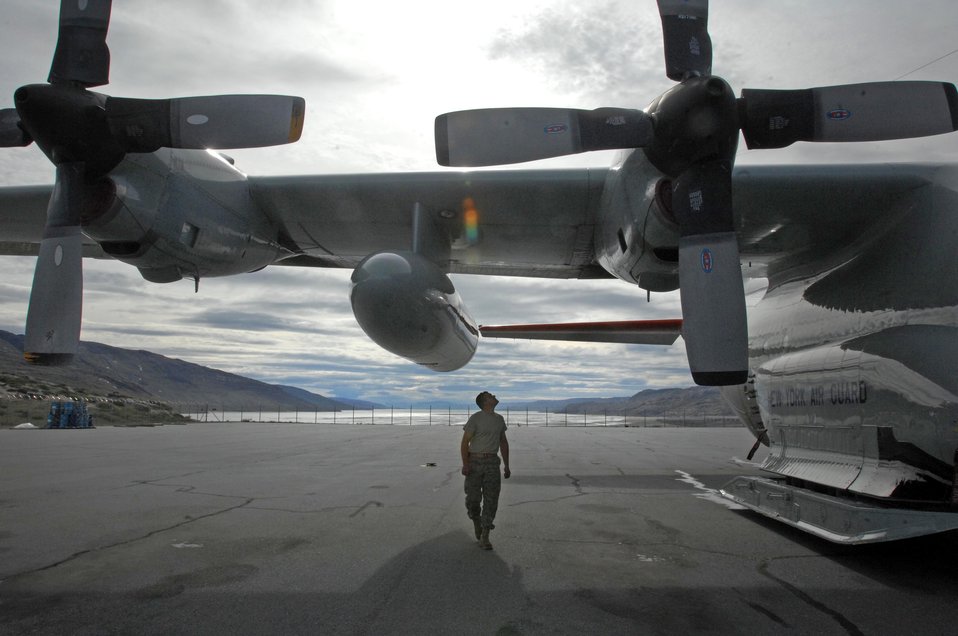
Polar mission

Staff Sgt. Kevin Byrns walks around the ski-equipped LC-130 Hercules cargo planes, following a mission July 29, 2010, to one of the remote science outposts in Greenland. Sergeant Burns is the crew chief for the 109th Airlift Wing of the New York Air National Guard.